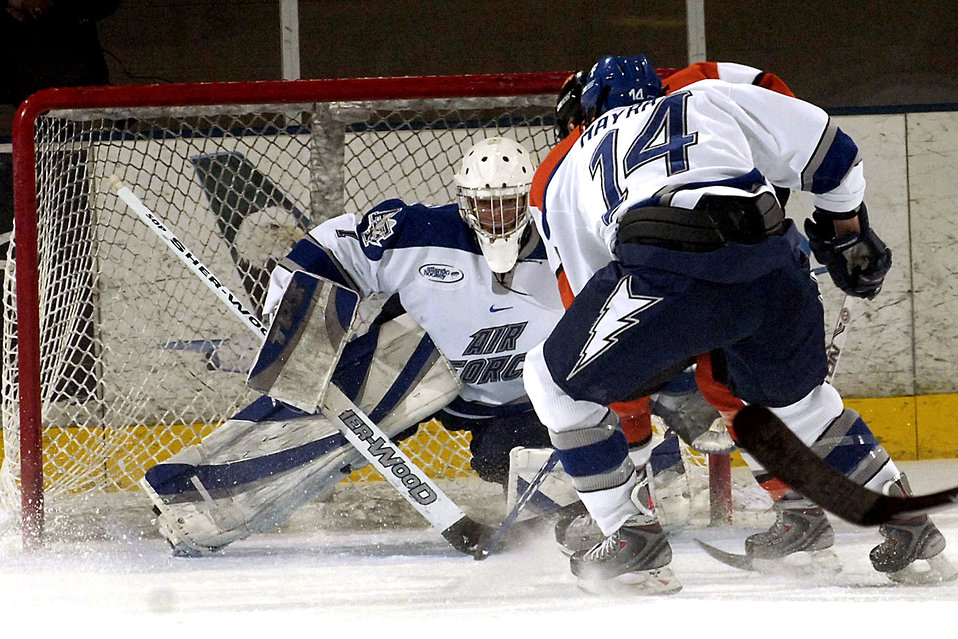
Falcons defeaft Rochester Institute of Technology

U.S. Air Force Academy Falcon sophomore goalie Andrew Volkening and junior defenseman Michael Mayra combine for a save as the Air Force defeated Rochester Institute of Technology, 5-2, in an Atlantic Hockey Association game Jan. 11 in the Cadet Ice Arena at Colorado Springs, Colo.